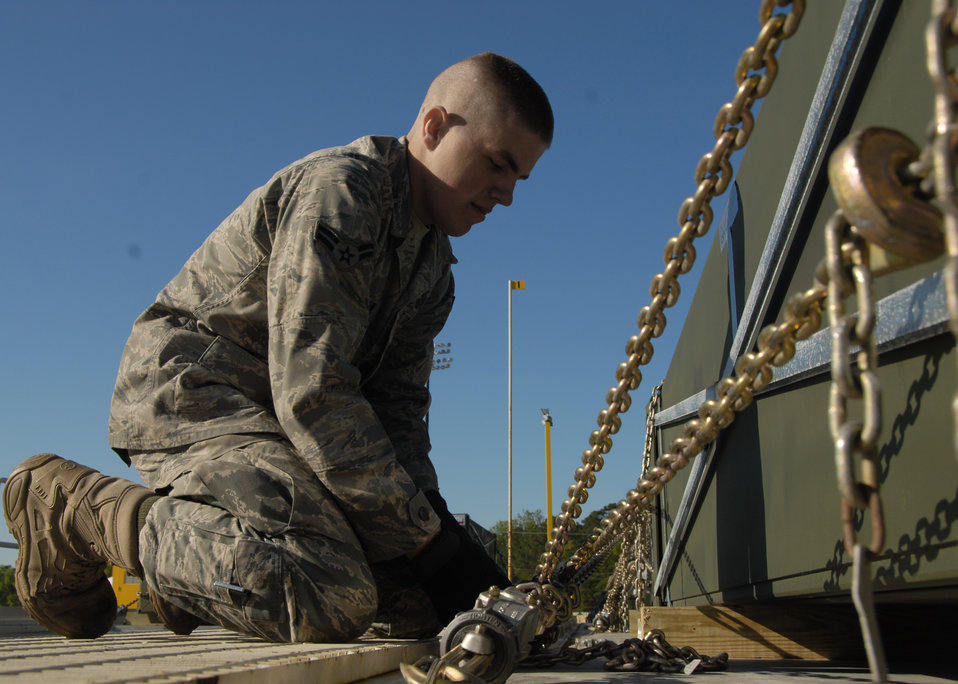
Charleston aerial port supports OEF build-up

Airman 1st Class Nicholas Braun secures boxes of airfield matting to a pallet April 9 at Charleston Air Force Base, S.C. The 437th Aerial Port Squadron will palletize and load approximately 32 acres of matting to be airlifted to locations throughout the Middle East. Airman Braun is an air transportation apprentice with the 437th APS.